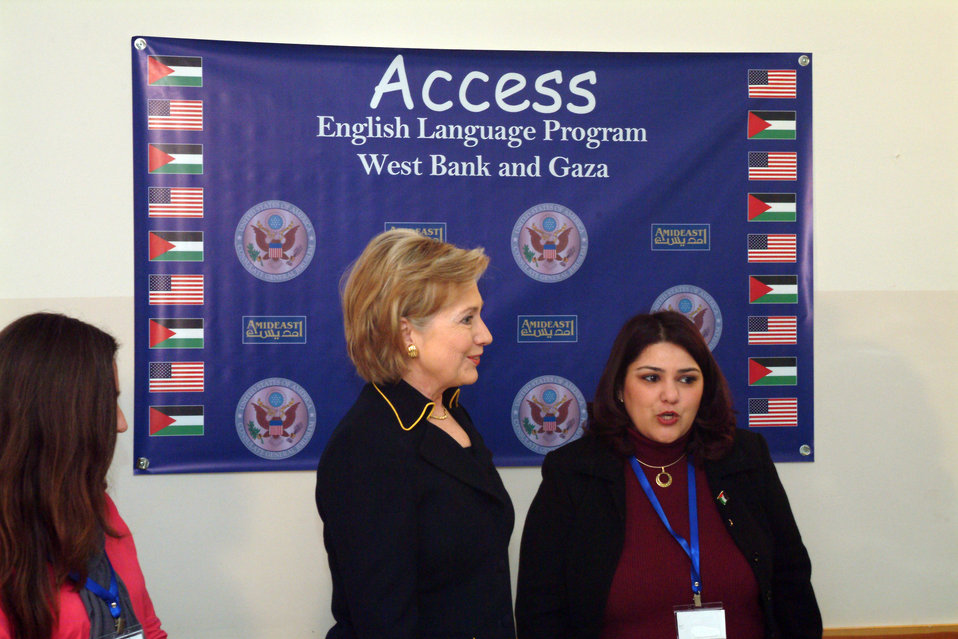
Secretary Clinton Attends Amideast Event

U.S. Secretary of State Hillary Rodham Clinton attends an Amideast event in Ramallah March 4, 2009.